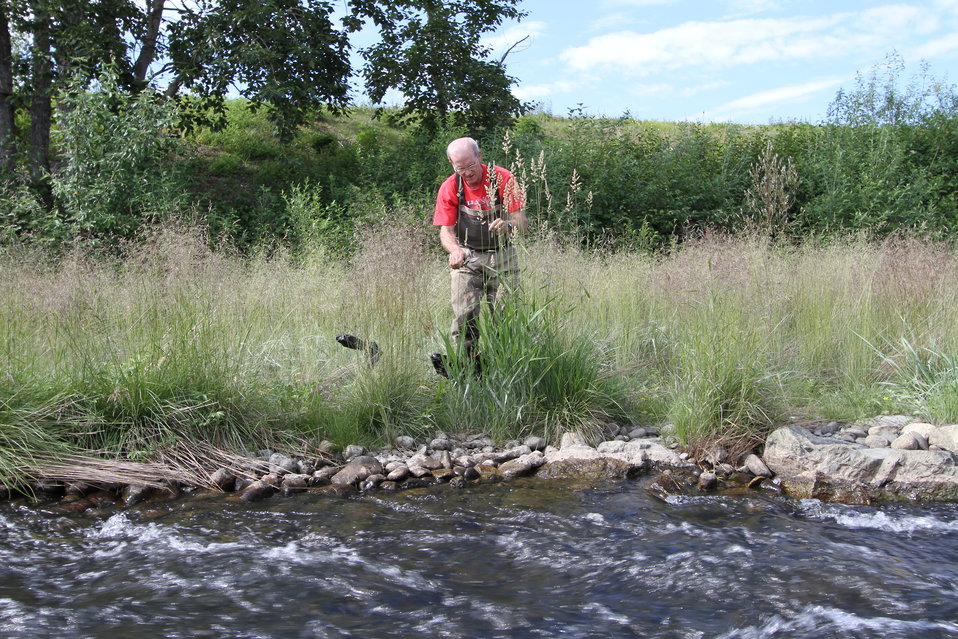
removing invasive reed canary grass in Anchorage, Alaska

USFWS Alaska Habitat Restoration & Partnership Programs Coordinator David Wigglesworth carefully clips the tops of invasive reed canary grass before removing the roots near Westchester Lagoon in Anchorage. This is the site of a major fish passage/fish habitat improvement project. USFWS/Katrina Mueller